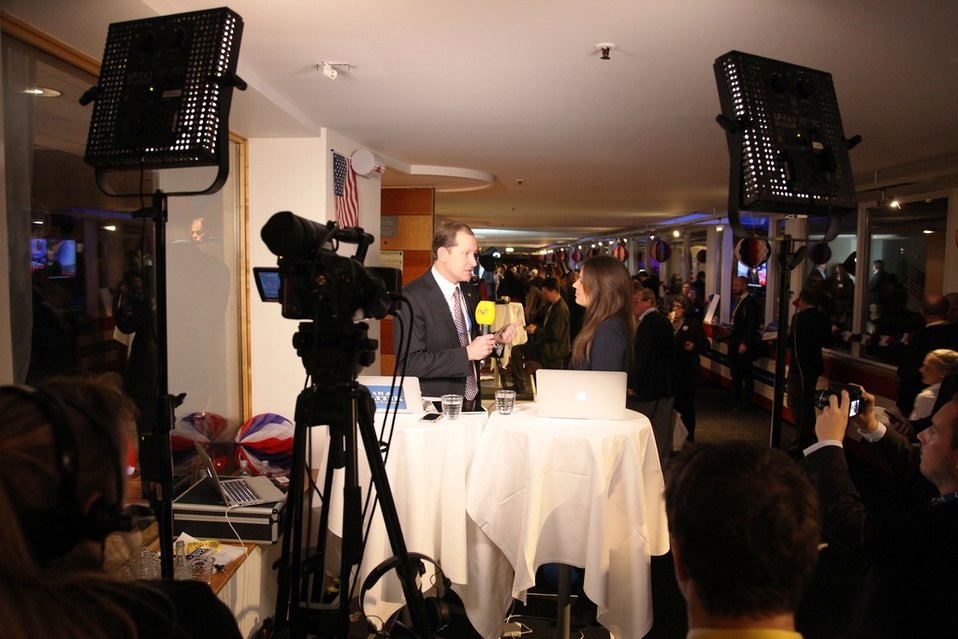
Ambassador Brzezinski Talks About the Election

U.S. Ambassador to Sweden Mark Brzezinski talks about the election at the U.S. Embassy in Stockholm Sweden's 2012 Presidential Election breakfast in central Stockholm in the early hours of the morning on November 7, 2012.